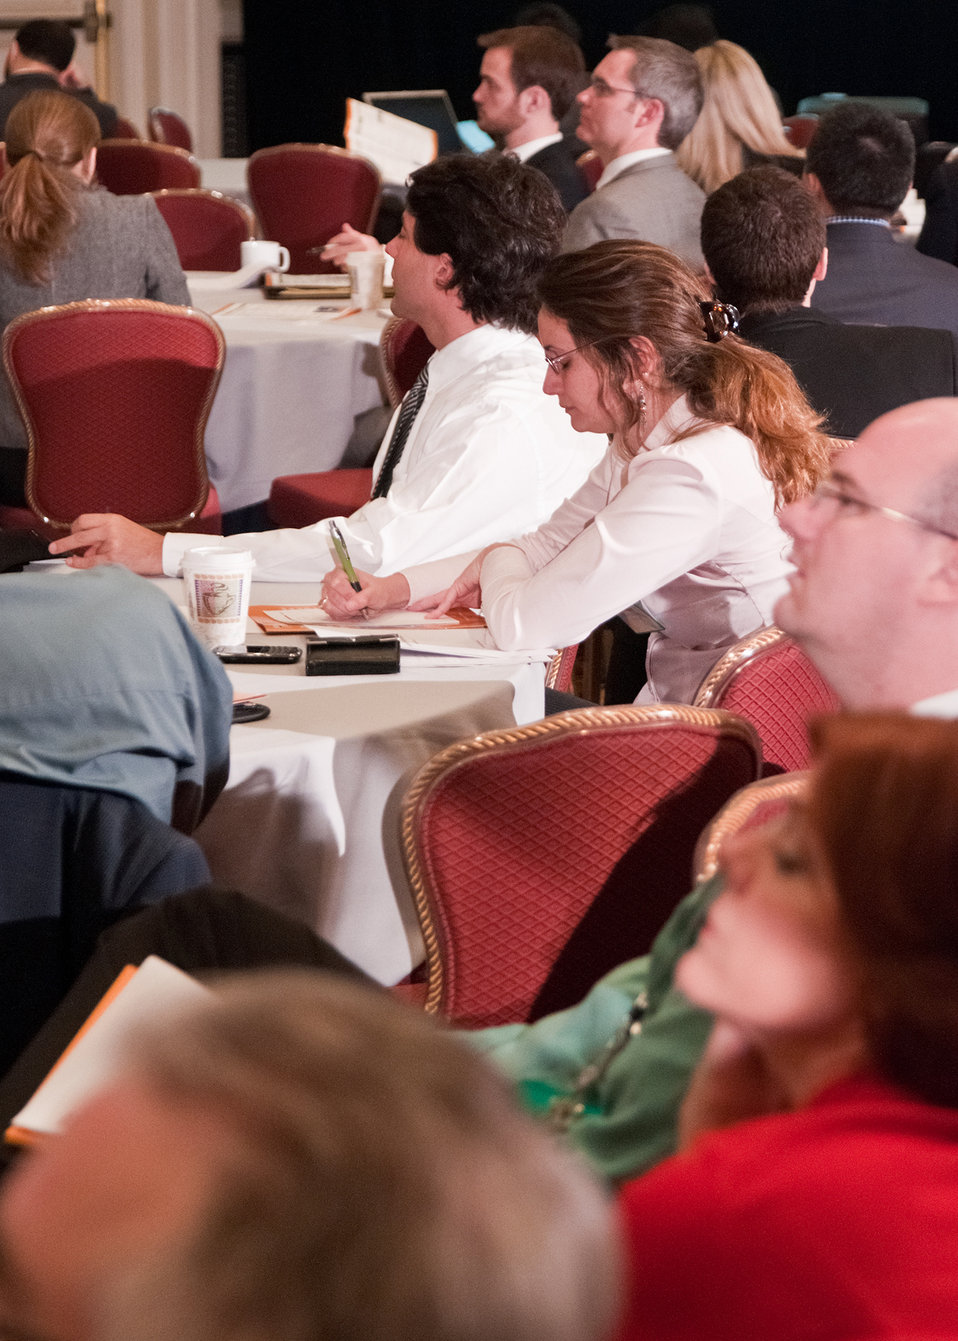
Attendees at the “World Agricultural Outlook Board Forum in Crystal City, VA, on February 25, 2011 listen to John Baize, President, John C. Baize and Associates, Falls Church, VA, discuss Southeast Asia’s emergence as a top U.S. market during the, “Export Opportunities in Rapid Growth Markets” session. The theme of this year’s Agricultural Outlook Forum is, “Today’s Strategies and Tomorrow’s Opportunities.”